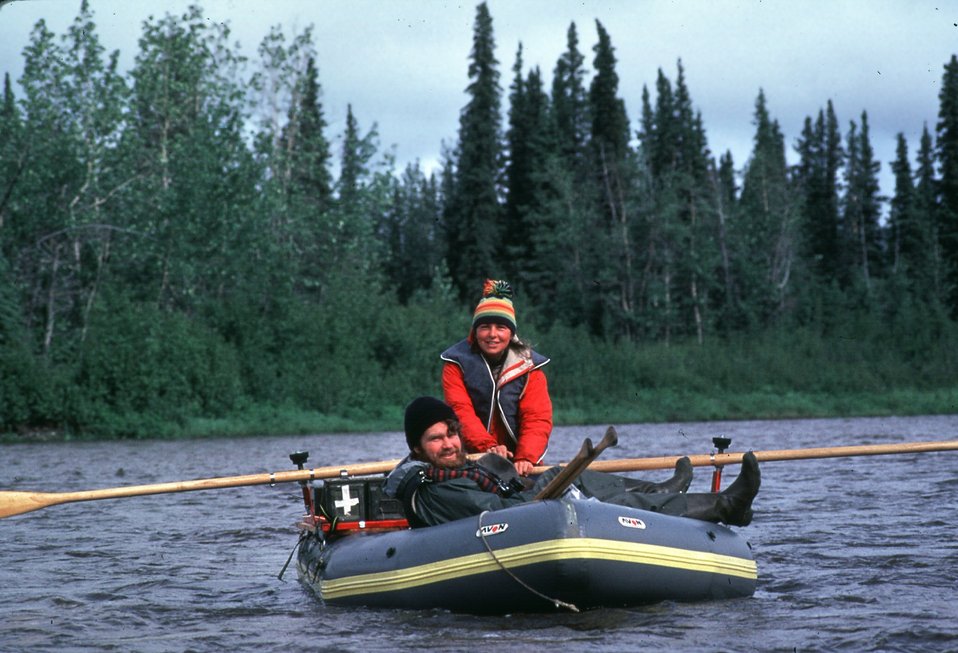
Floating down the Gulkana NWSR, river cleanup patrol